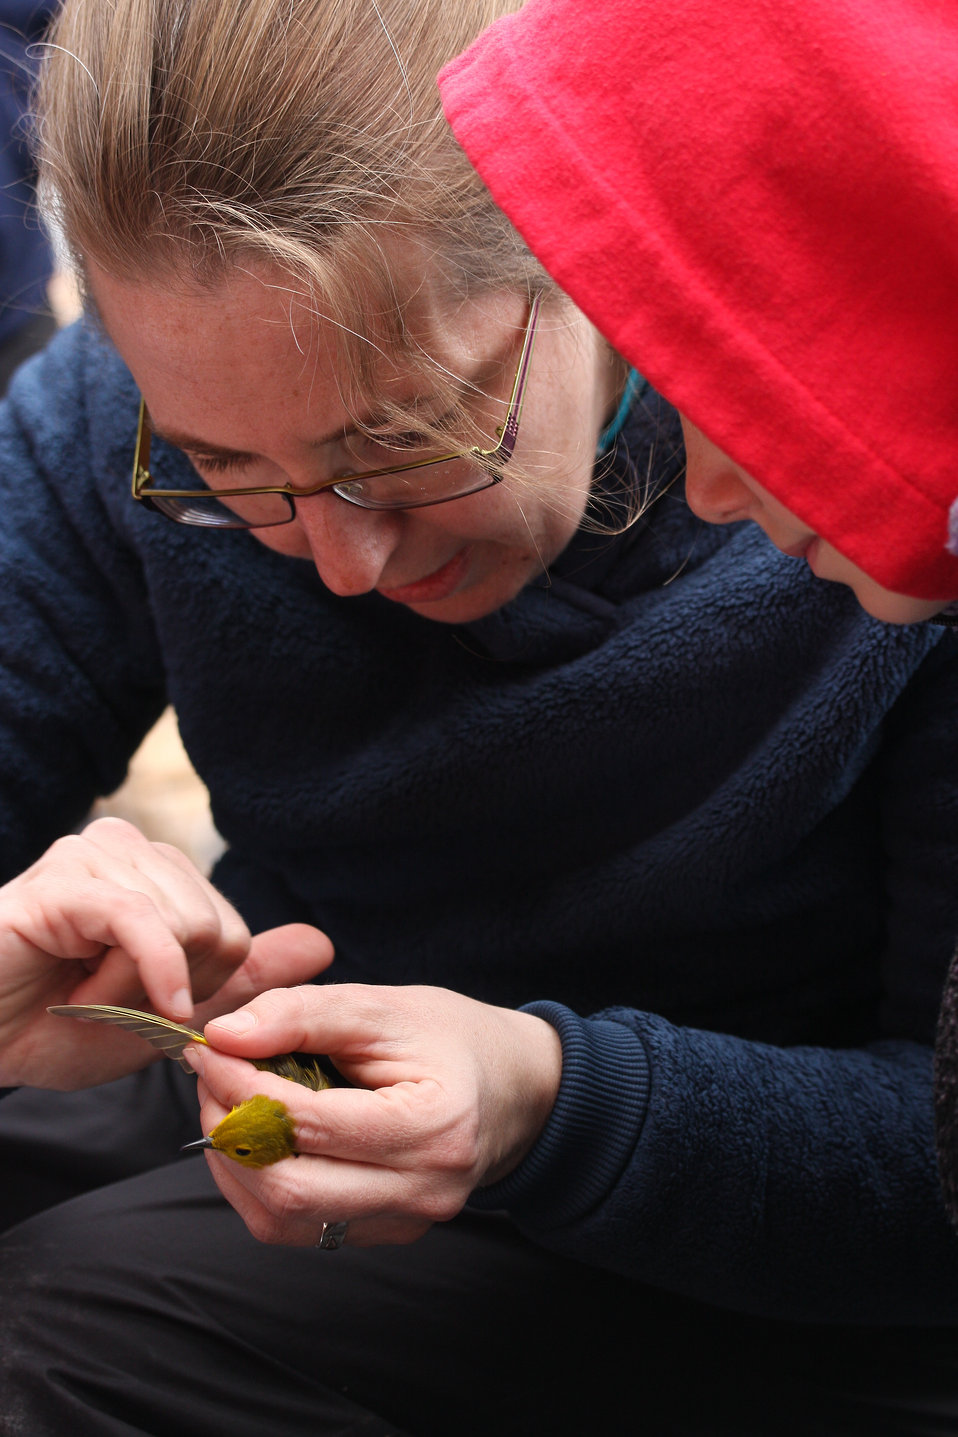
Volunteer Cindy Trussell demonstrates how to identify a warbler

Photo Credit: Lisa Hupp/USFWS
Source: Kodiak NWR